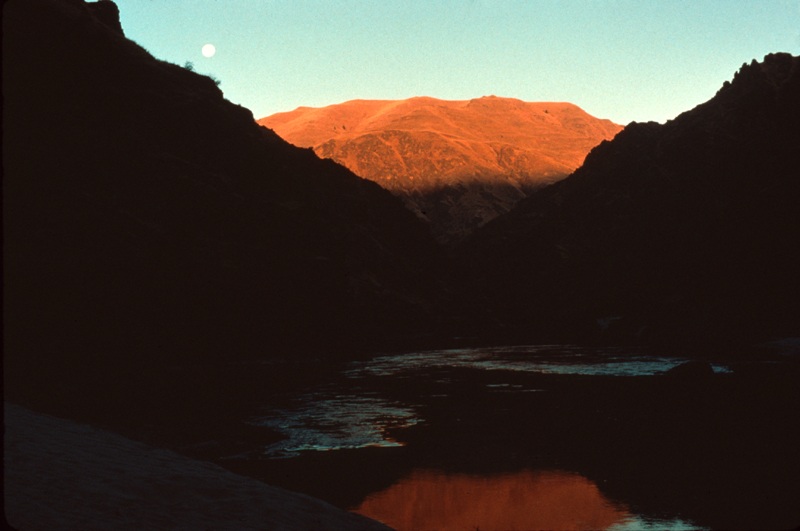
Lower Salmon River Cottonwood Field Office UCSC Upper Columbia-Salmon Clearwater District Sunset Canyon Upper Columbia Salmon Clearwater District